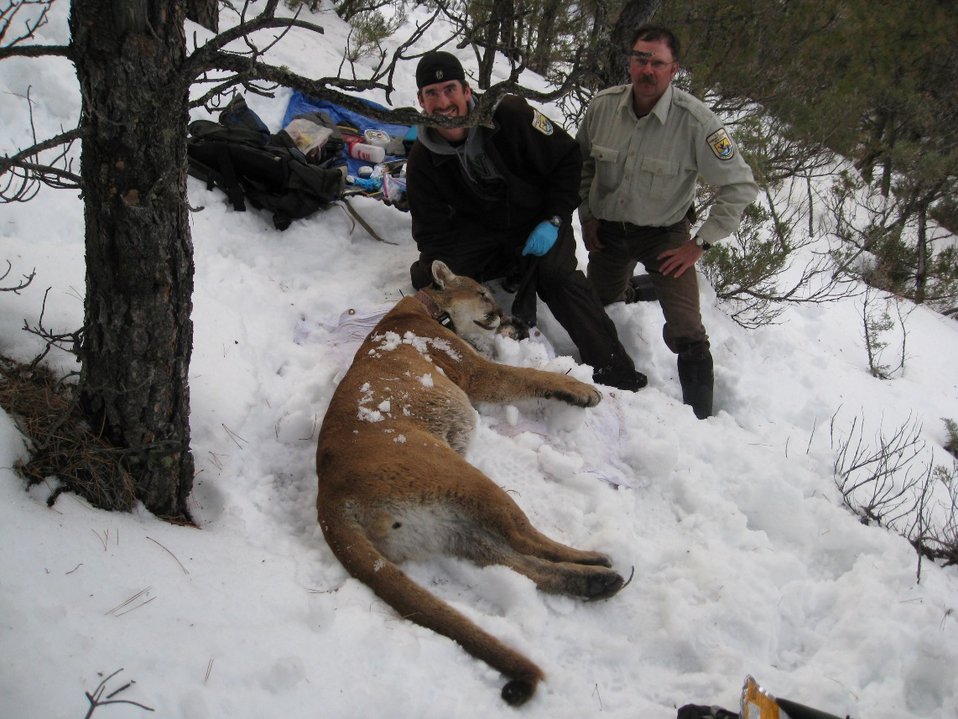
Immobilized Mountain Lion

USFWS biologists are conducting a mountain lion study in cooperation with Montana Fish, Wildlife and Parks, Rocky Boy’s Reservation, Fort Belknap Reservation, the Montana Cooperative Wildlife Research Unit and the World Wildlife Fund.